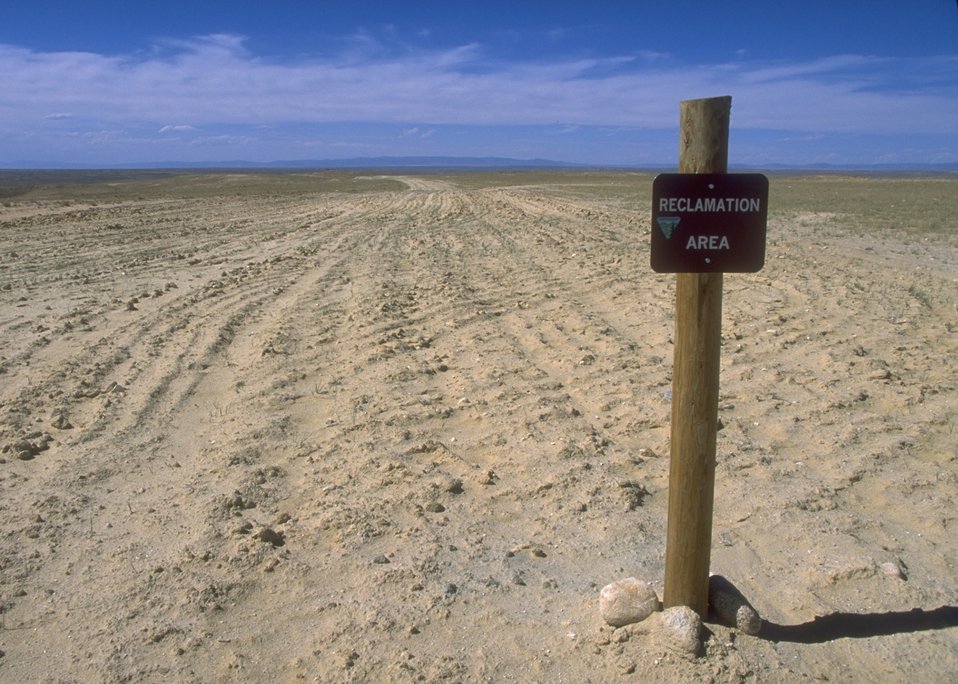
BLM reclamation sign at Gas Hill Abandoned Mine Lands, Lander Field Office.